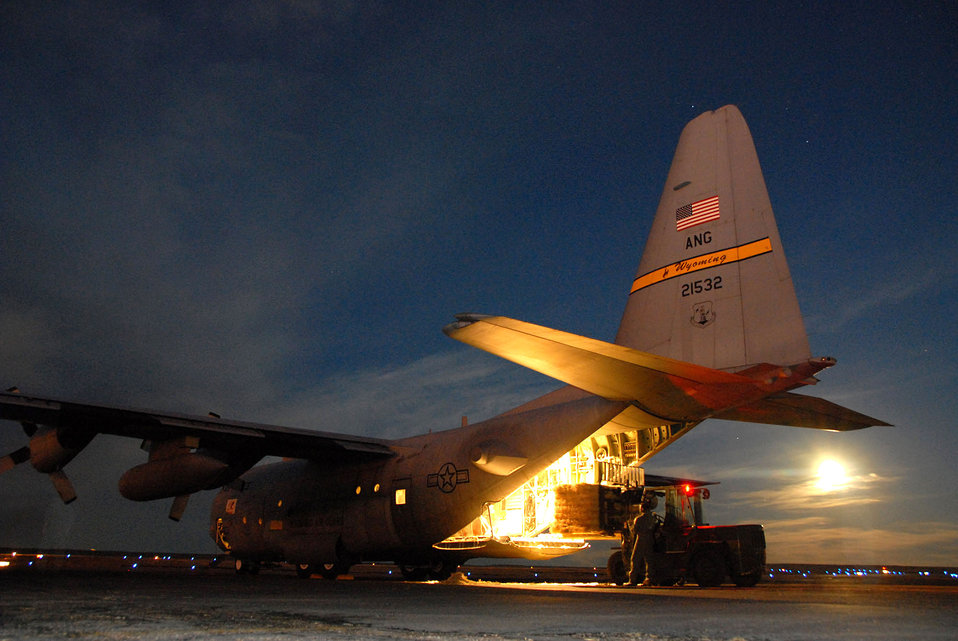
Emergency feeding mission

Staff Sgt. Leslie Wuerflein of the 140th Vehicle Maintenance section loads two one-ton hay bales Jan. 3 onto a C-130 Hercules out of Cheyenne, Wyo. She is readying the aircraft in Pueblo, Colo., for an early-morning emergency feeding mission the next day.